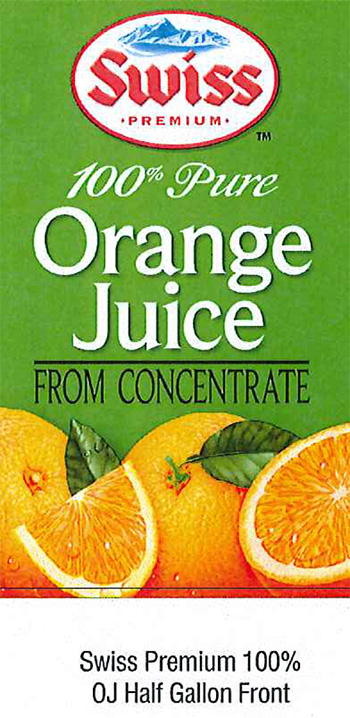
RECALLED – Orange Juice

March 3, 2014 – Product Recall – Lehigh Valley Dairy Conducts Voluntary Recall of Lehigh Valley, Swiss Premium, and Price Chopper Brand Orange Juice Because It May Contain Undeclared Allergen (Milk).